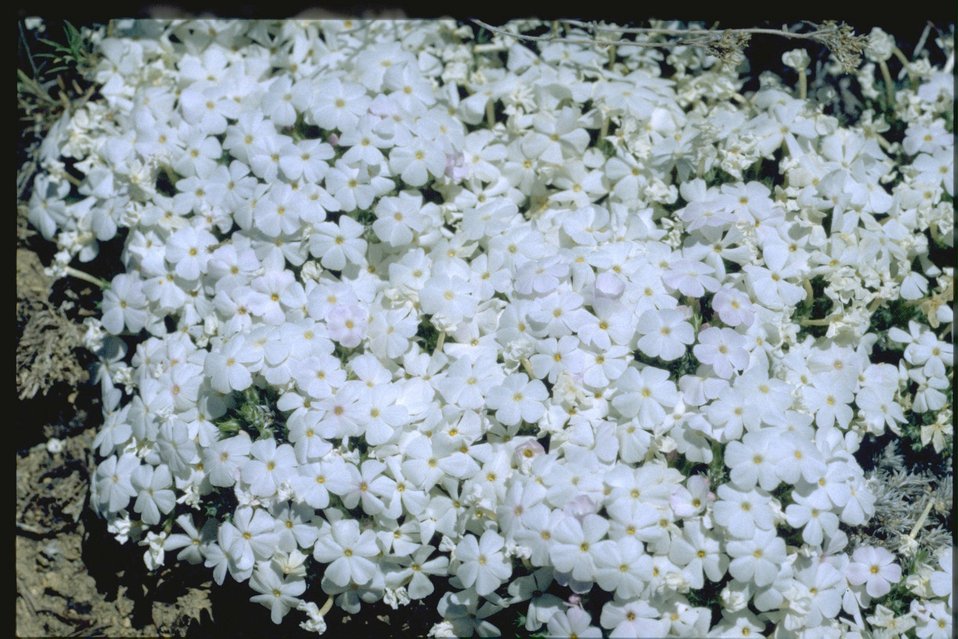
Medium shot of phlox habitat.